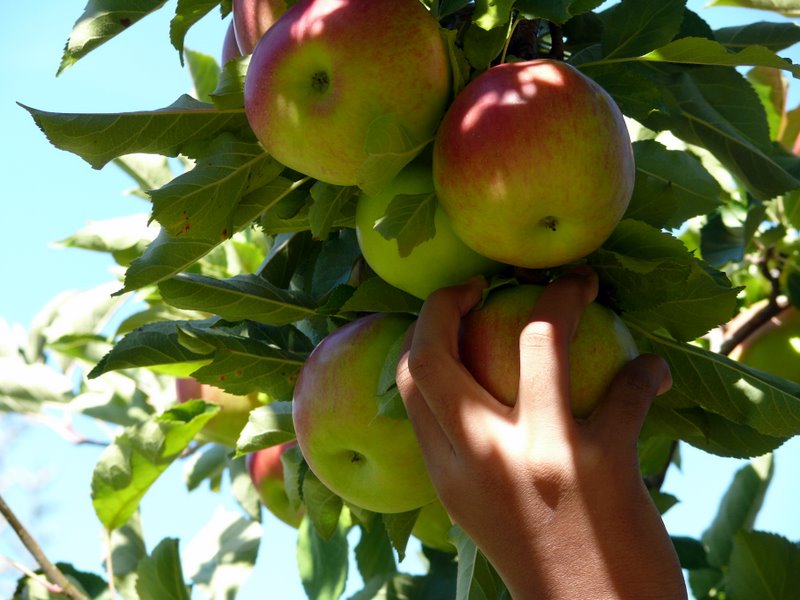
Uploaded by request of John & Donna McDaniel

Photo taken in Schoharie Valley, NY

'Fall Picking'